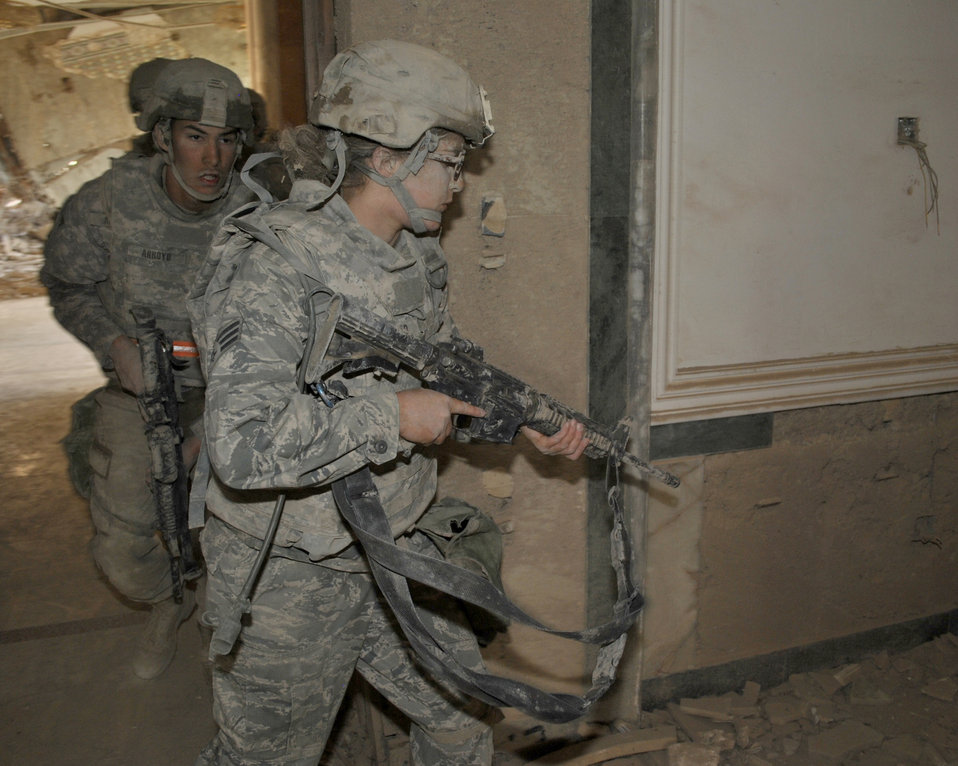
Airman marches, low-crawls and sweats her way into history: Part two

Senior Airman Courtney Beard leads a team through an abandoned palace Nov. 21, 2010, at Victory Base Complex, Iraq. The Brooklyn, N.Y., native was the first female Airman to complete the 18-hour Spur Ride, a series of mental and physical tests, held by the III Corps, Task Force Phantom. Airman Beard is a 467th Expeditionary Intelligence Squadron intelligence analyst.